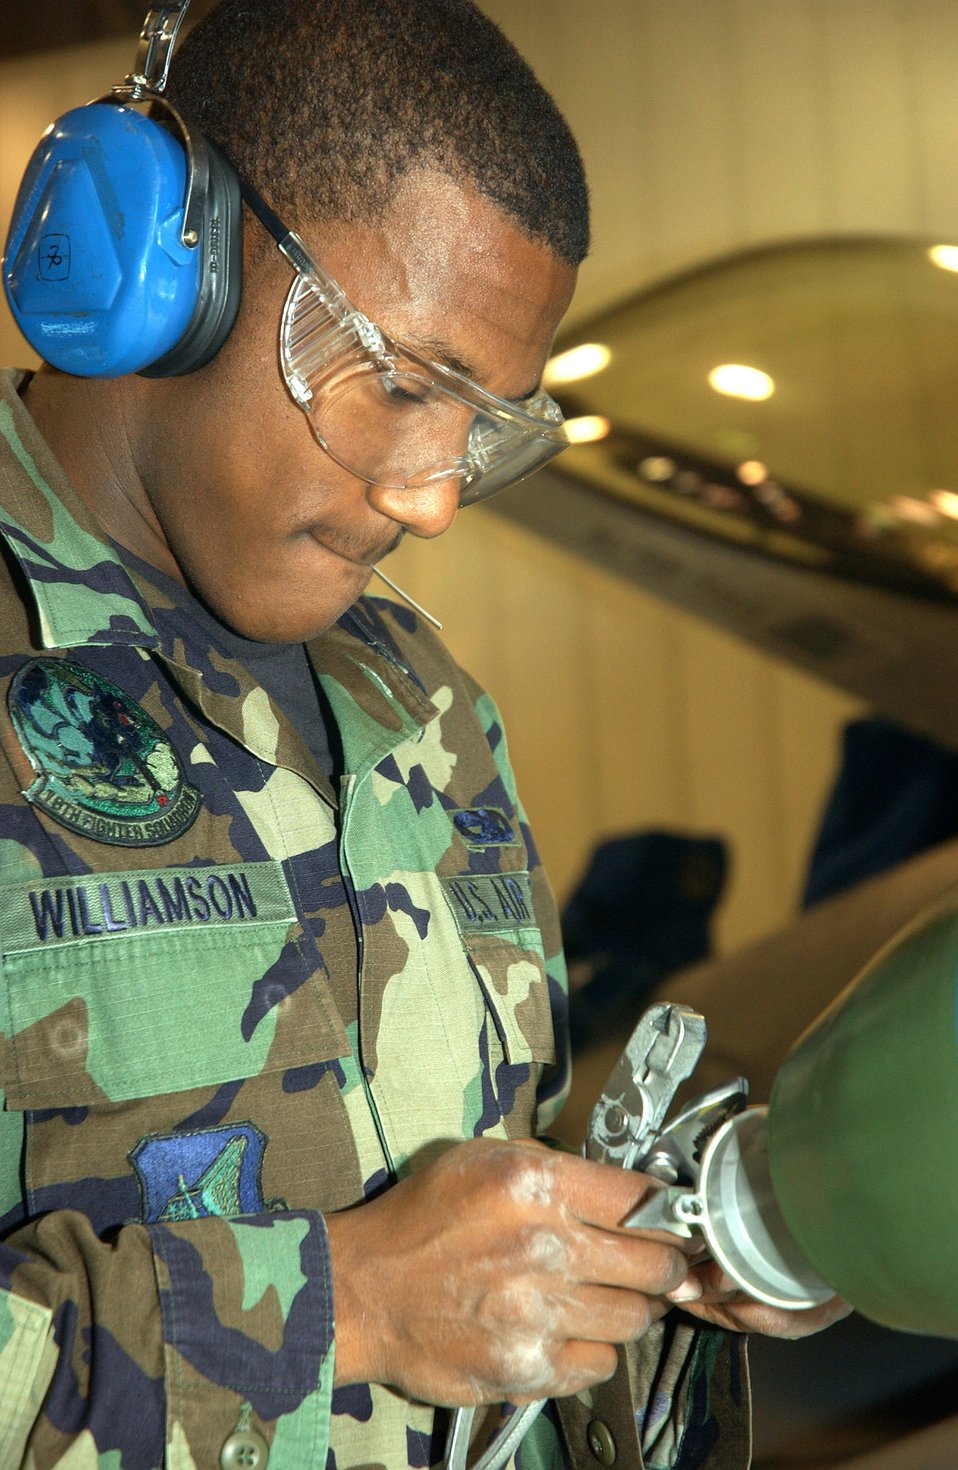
Bomb's away

EIELSON AIR FORCE, Alaska (AFPN) -- Airman Brandon Williamson cuts a lanyard off of an MK-82 500-pound bomb during a quarterly load crew competition here. Each team of F-16 Fighting Falcon and A-10 Thunderbolt II weapon loaders is evaluated in timeliness and accuracy of loading munitions. Airman Williamson is a weapons loader assigned to the 354th Aircraft Maintenance Squadron.